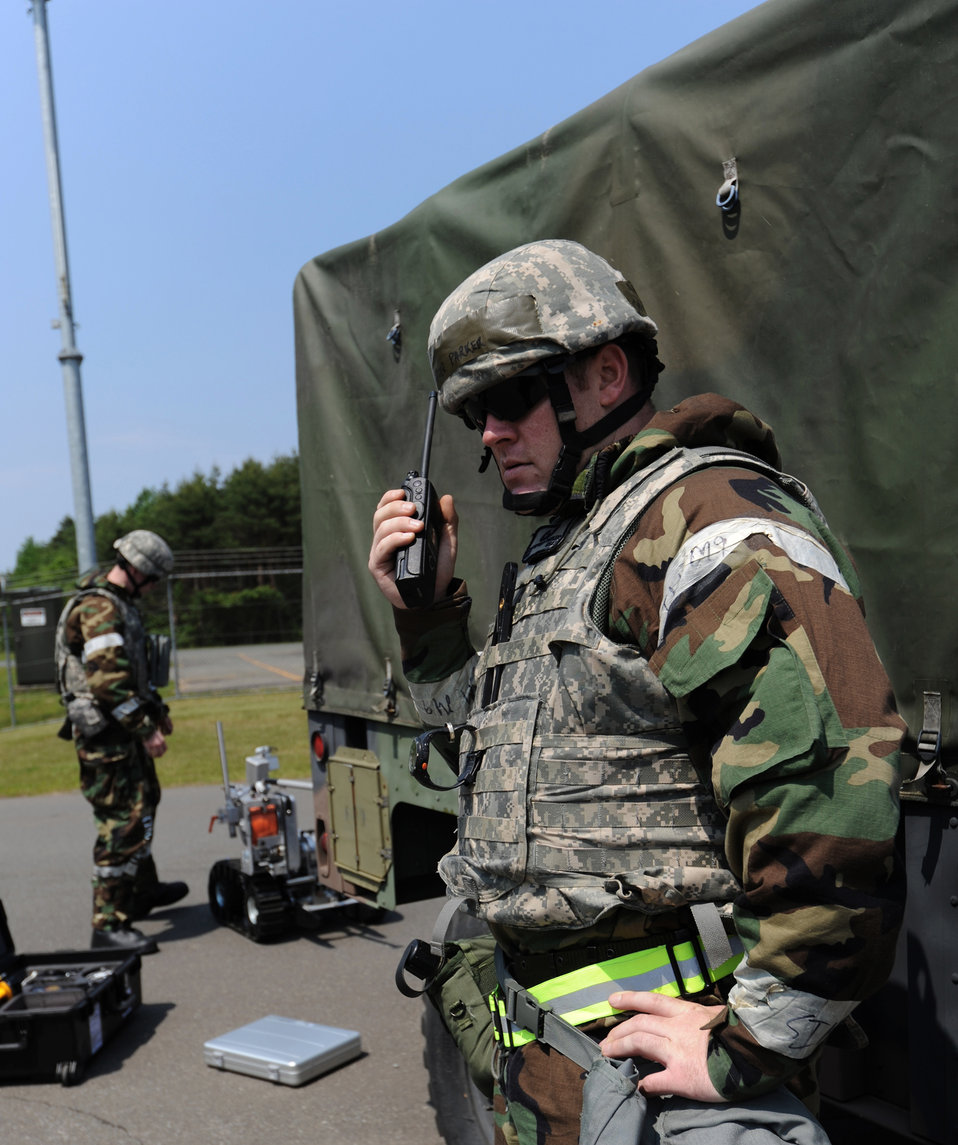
Simulated attack training exercise

Staff Sgt. Kristopher Parker relays information about an